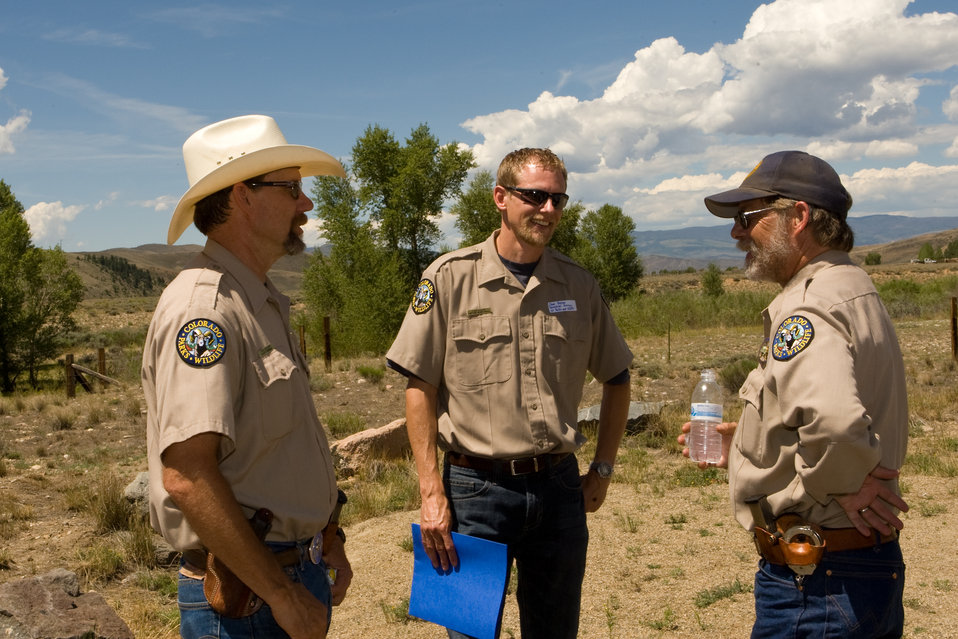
Colorado Rare Plant Conservation Initiative

The Colorado Rare Plant Conservation Initiative (RPCI) is a partnership of 23 statewide and regional agencies, private organizations, and academic institutions working to conserve 121 rare plants in Colorado. As part of these efforts the group developed the Colorado Rare Plant Conservation Strategy, developed Best Management Practices to reduce energy development impacts, addressed climate change, and developed focused strategies for the conservation of individual species at eight priority landscapes. The group has also worked to coordinate volunteer efforts for plant conservation across the state.